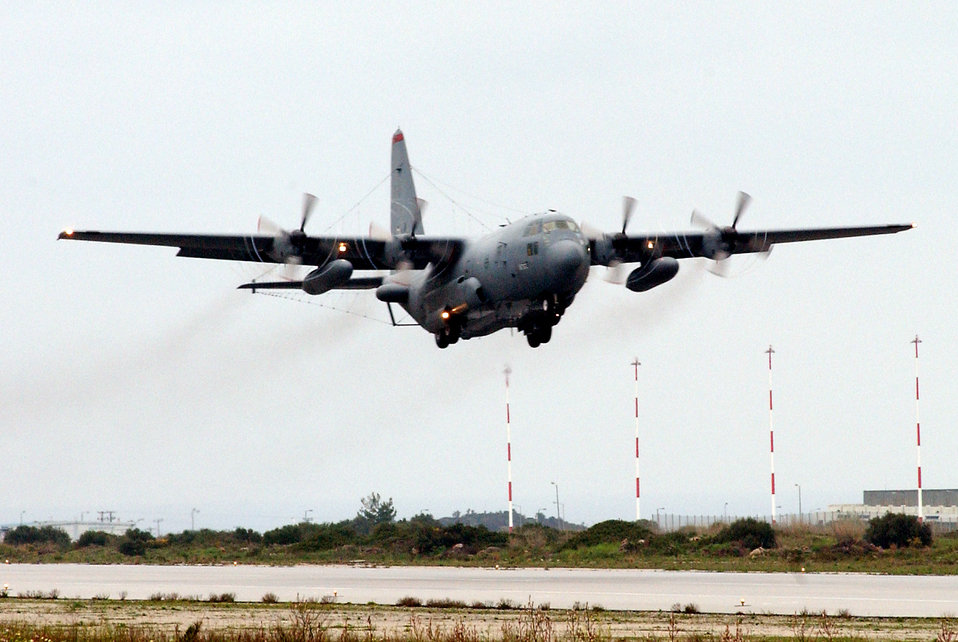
Compass Call

OPERATION IRAQI FREEDOM -- An EC-130H Compass Call, assigned to the 398th Air Expeditionary Group, takes off from a forward deployed operating base located in the Mediterranean region in support of Operation Iraqi Freedom. Operation Iraqi Freedom is the multinational coalition effort to liberate the Iraqi people, eliminate Iraq's weapons of mass destruction and end the regime of Saddam Hussein.